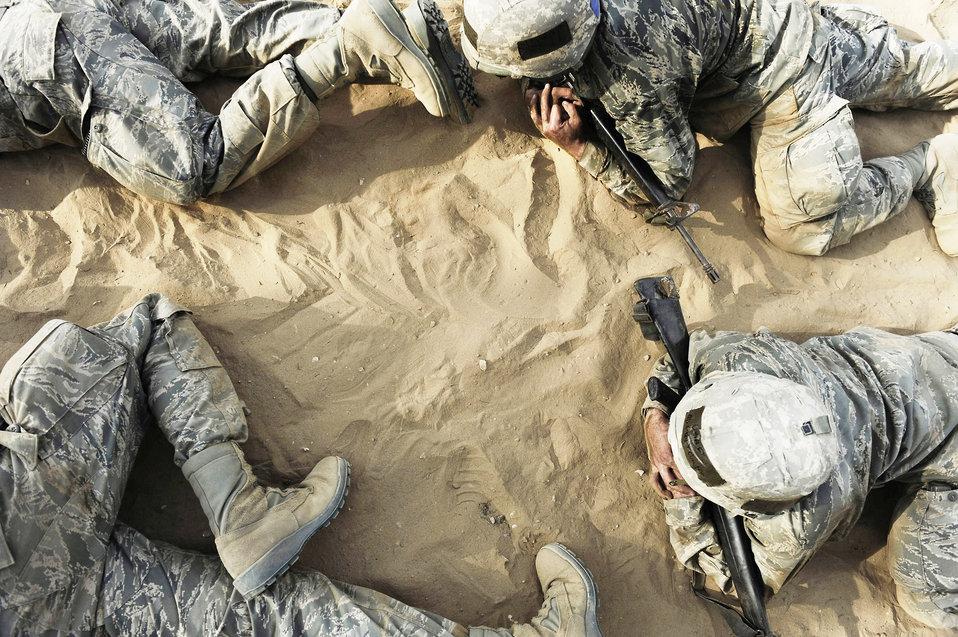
BEAST gets rave reviews a year after opening

Basic trainees low crawl through a tactical course at the Basic Expeditionary Airman Skills Training course at Lackland Air Force Base, Texas. BEAST replicates the sights, sounds and emotions Airmen will experience in the deployed environment.